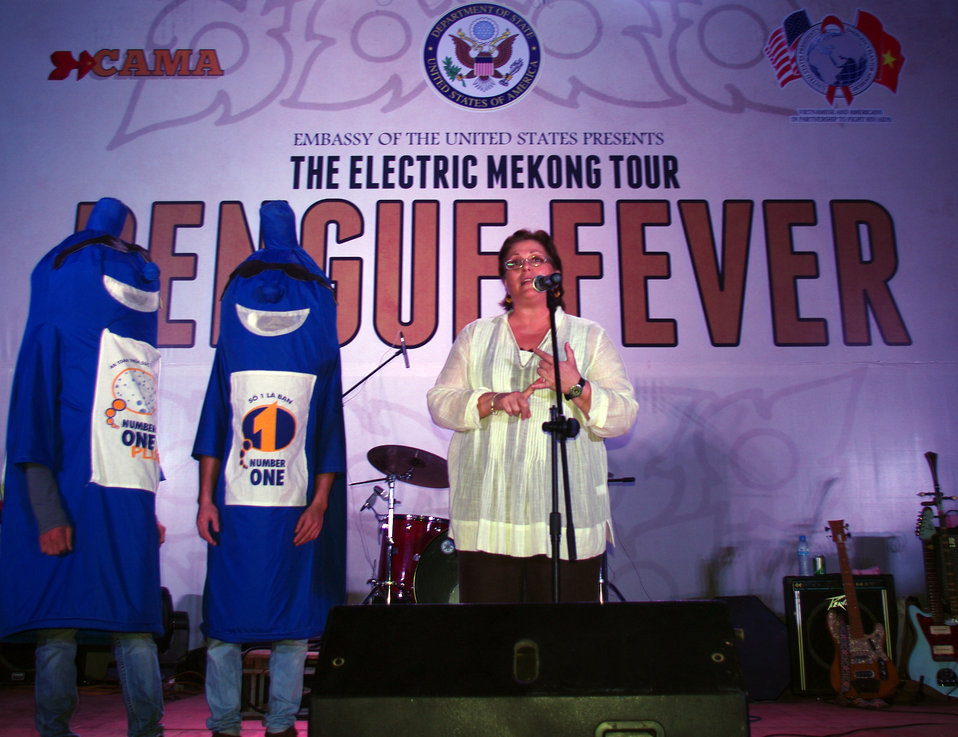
PEPFAR, U.S. Embassy Host Dengue Fever Concert in Hanoi

U.S. Embassy Deputy Chief of Mission Claire Pierangelo introduces the Dengue Fever band.